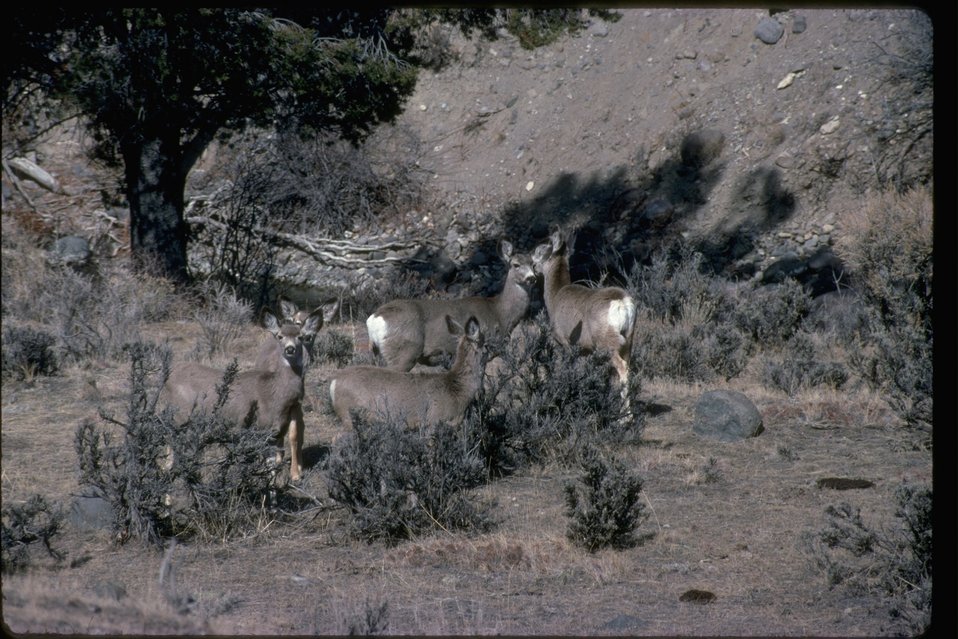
A small herd of Mule Deer standing near some brush.